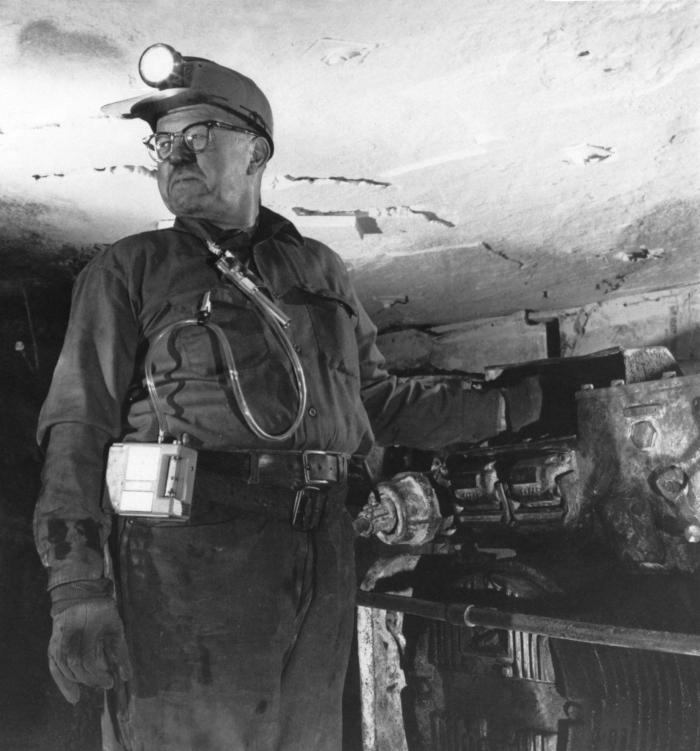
This late 1970s photograph shows an underground coal miner wearing a NIOSH personal air sampling pump.